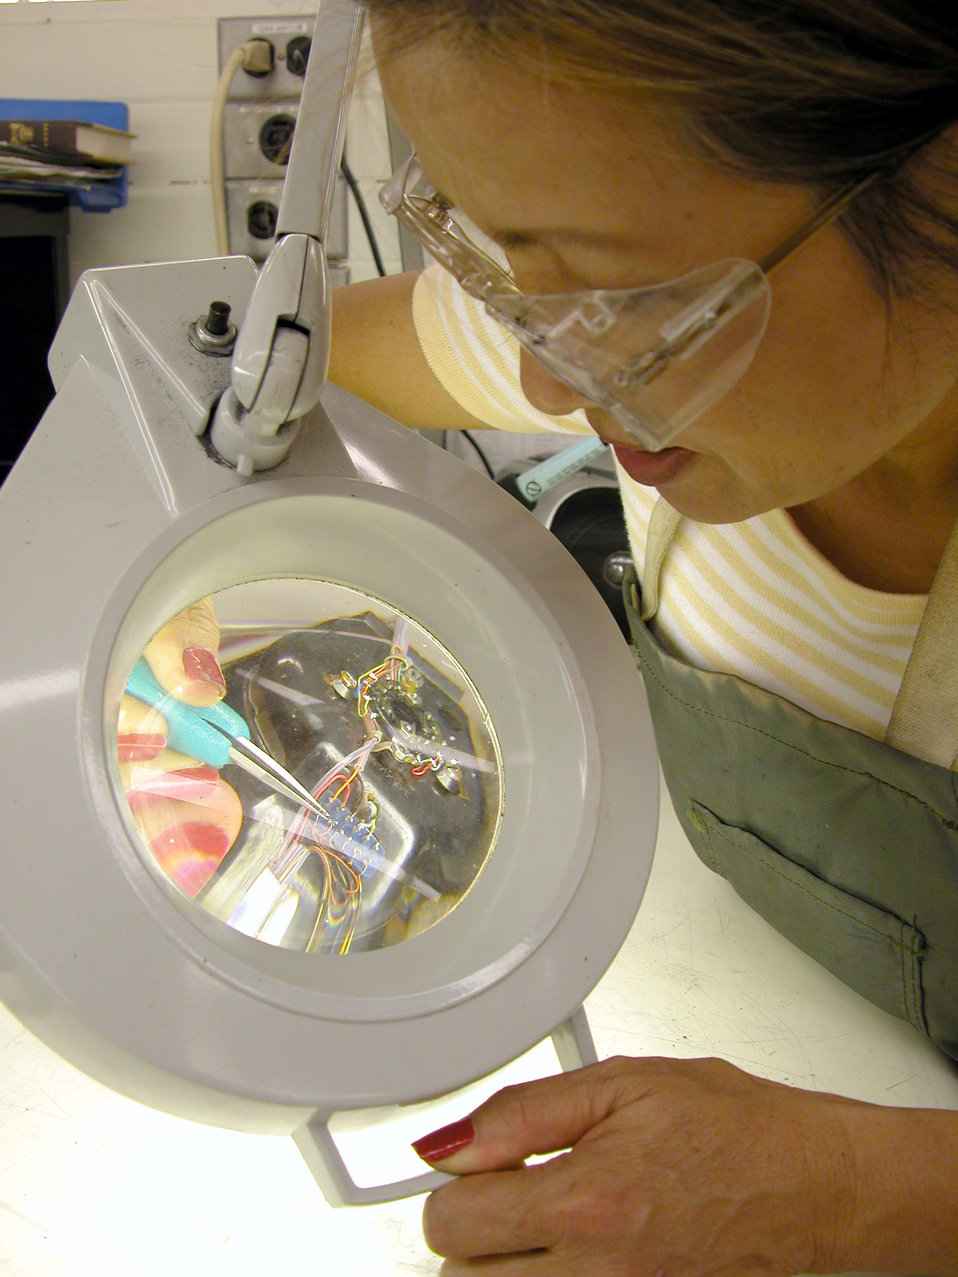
Close-up work

ROBINS AIR FORCE BASE, Ga. -- Sue Nottis works on a vertical gyro here. The gyro repair section produces gyros for the F-15 Eagle, C-5 Galaxy, C-130 Hercules, C-141 Starlifter, KC-135 Stratotanker and the B-1 Lancer.